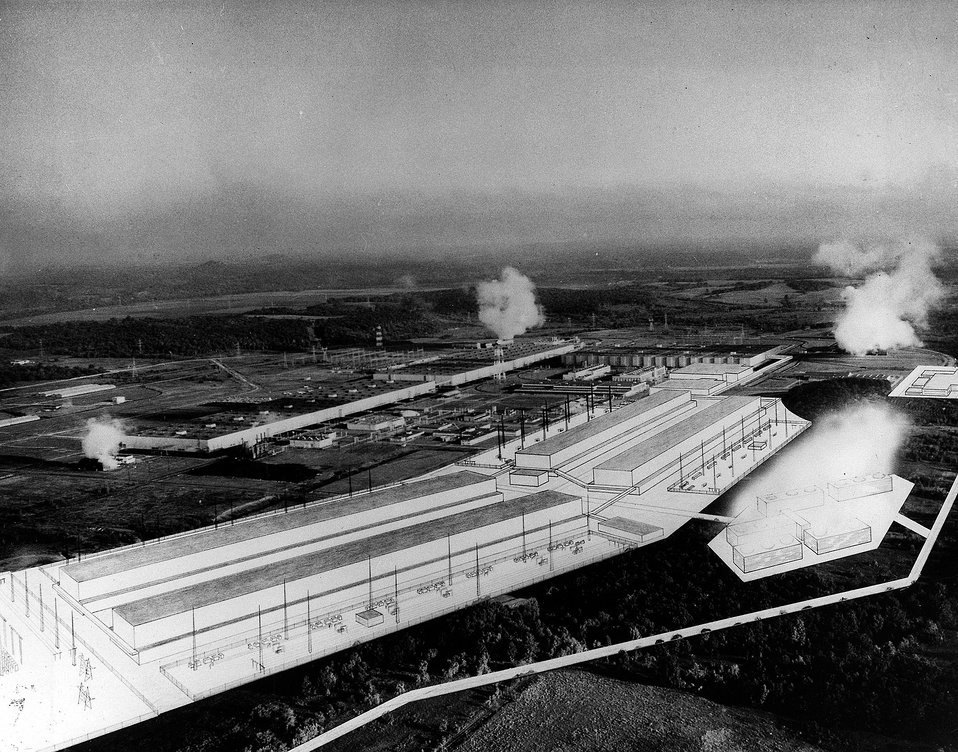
Shown is the present Energy Research and Development Administration's Gaseous Diffusion Plant at Portsmouth, Ohio, with the planned addition sketched in the foreground. The add-on will double the facility's enrichment capacity. Circa 1977.